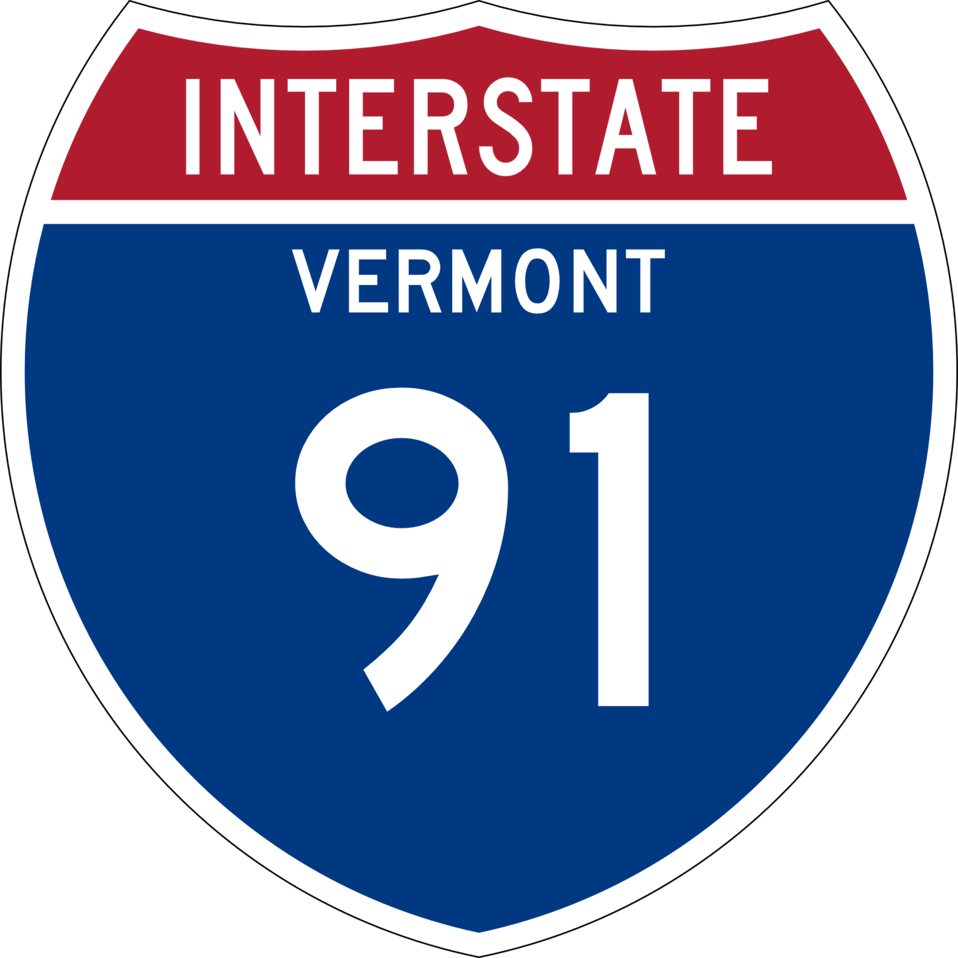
I-91 shield with Vermont state name